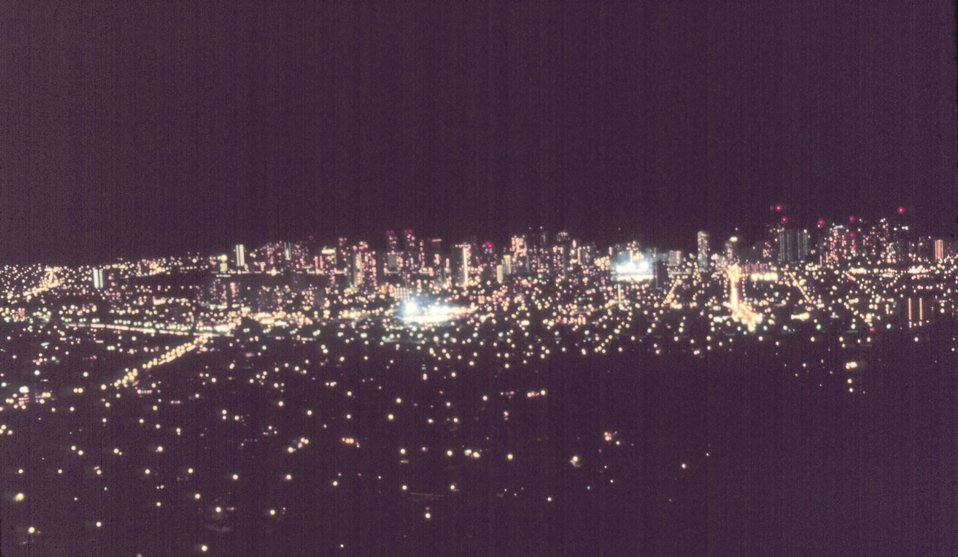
Overlooking Honolulu at night from Tantalus Drive.